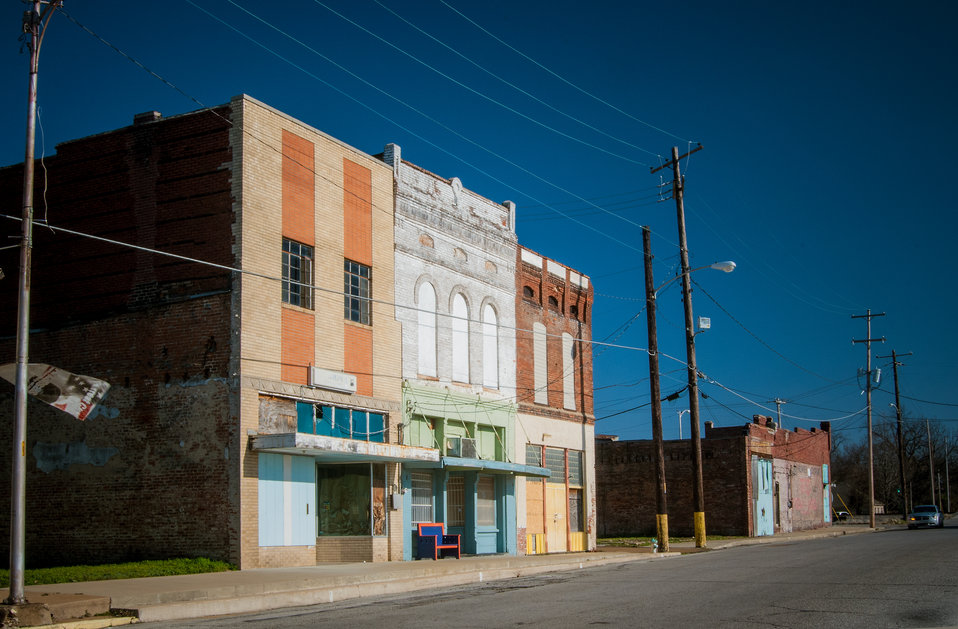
The sun shines on Forest City, AR on Mar. 5, 2013. The East Arkansas Enterprise Community, Inc. in Forrest City, AR is one of 42 community-based organizations located in high poverty areas in the U.S. to benefit from the Arkansas Delta Seeds of Change (ADSOC) Initiative. The U.S. Department of Agriculture (USDA) in partnership with Heifer International (an International organization whose mission is to work with communities to end hunger and poverty and care for the Earth) and various for-profit and non-profit organizations have put in motion the “Seeds of Change Implementation Plan” to use sustainable agriculture to build food systems in the Arkansas Delta. The program has evolved into the ADSOC Initiative.